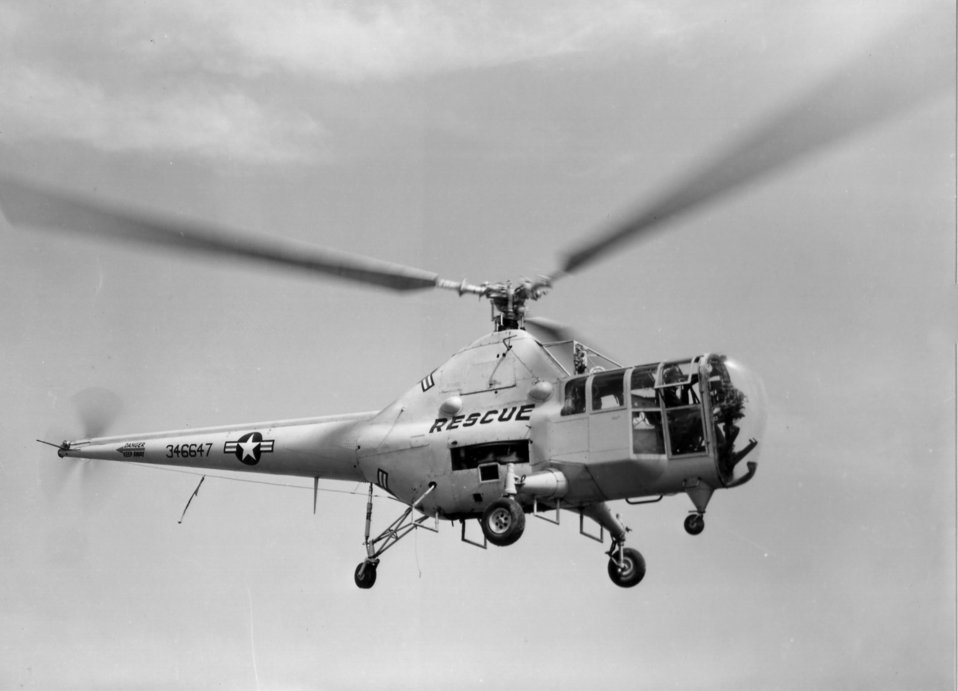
H-5